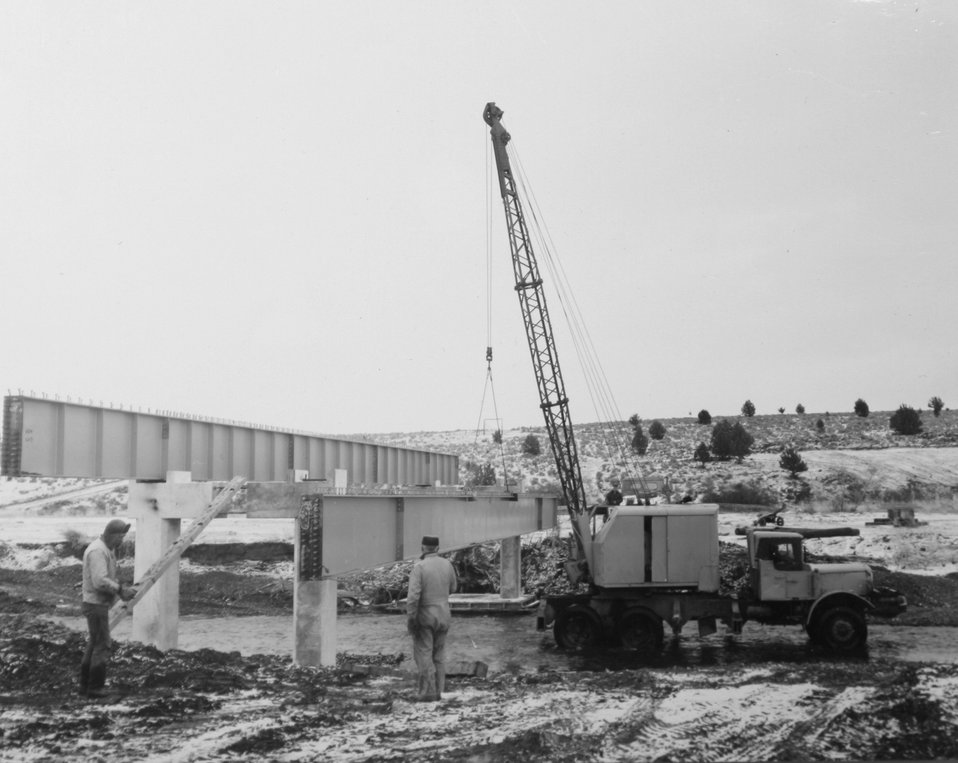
Blitzen River Bridge Construction at Page Springs. circa 1966